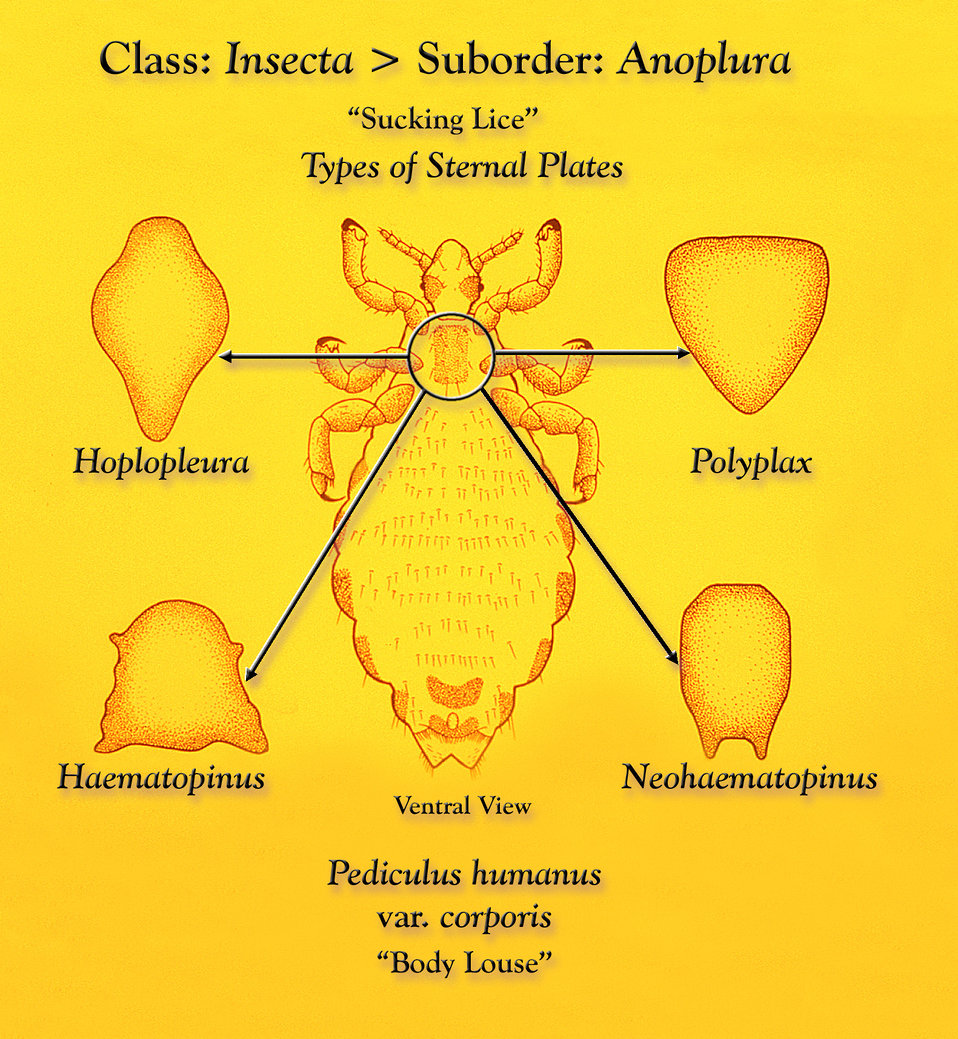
This illustration depicts a ventral view of a female body louse, Pediculus humanus var. corporis, which reveals the size, location, and shape of the thoracic sternal plate of this genus, as well as four other genera of Anoplural sucking lice, Hoplopleura, Polyplax, Haematopinus, and Neohaematopinus.